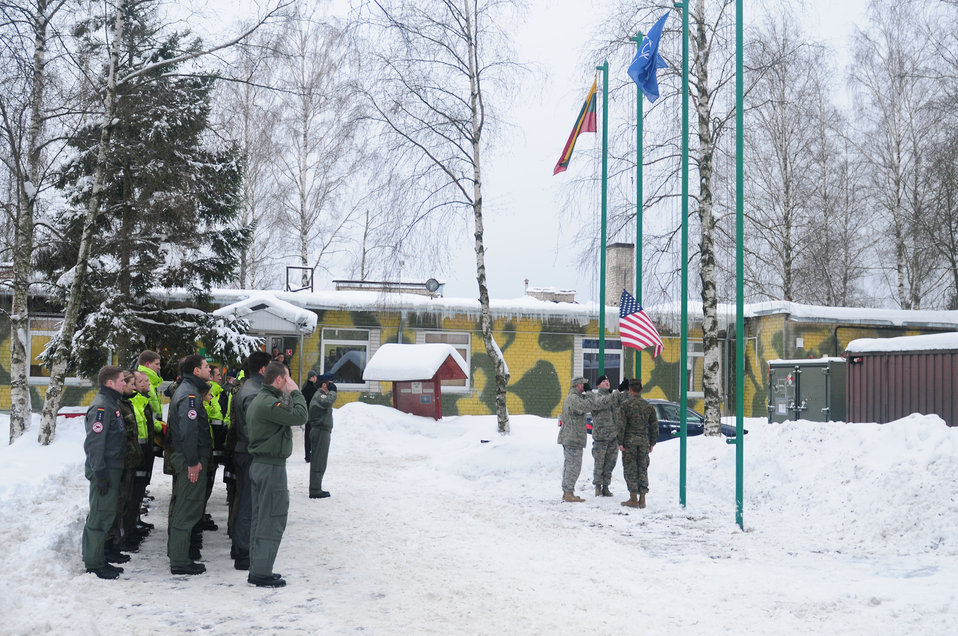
Baltic Air Mission

A flag detail of two Airmen and a Marine lower an American flag so a German flag can be raised during a ceremony, Jan. 5, 2011, at Lithuania Air Force Base. The flag ceremony symbolized the 493rd Expeditionary Fighter Squadron relinquishing the Baltic air policing mission to the German air force.